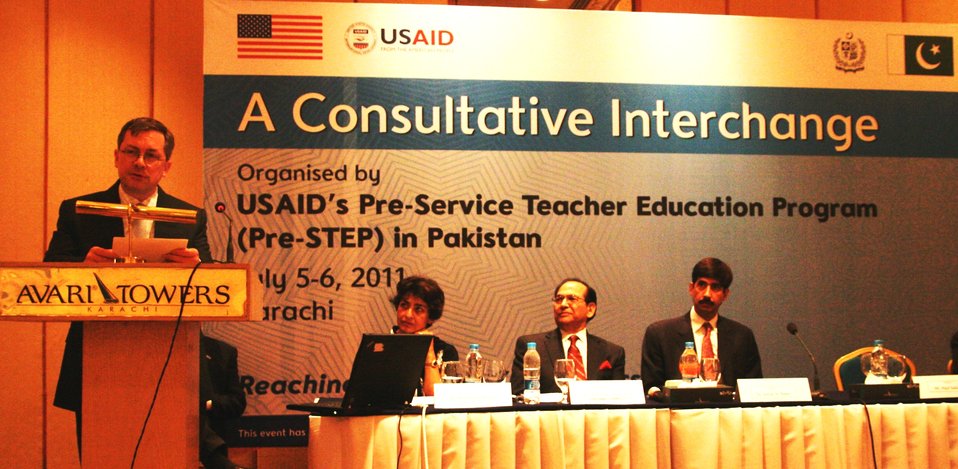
U.S. is supporting teacher education reforms in Pakistan

Karachi, July 6, 2011 – Mr. Paul Sabatine, Dy. Mission Director USAID Karachi, talking at the launch ceremony of Pre-STEP's Consultative Interchange. A USAID-sponsored forum works to identify priority reforms in teacher education and map out policies for their implementation.